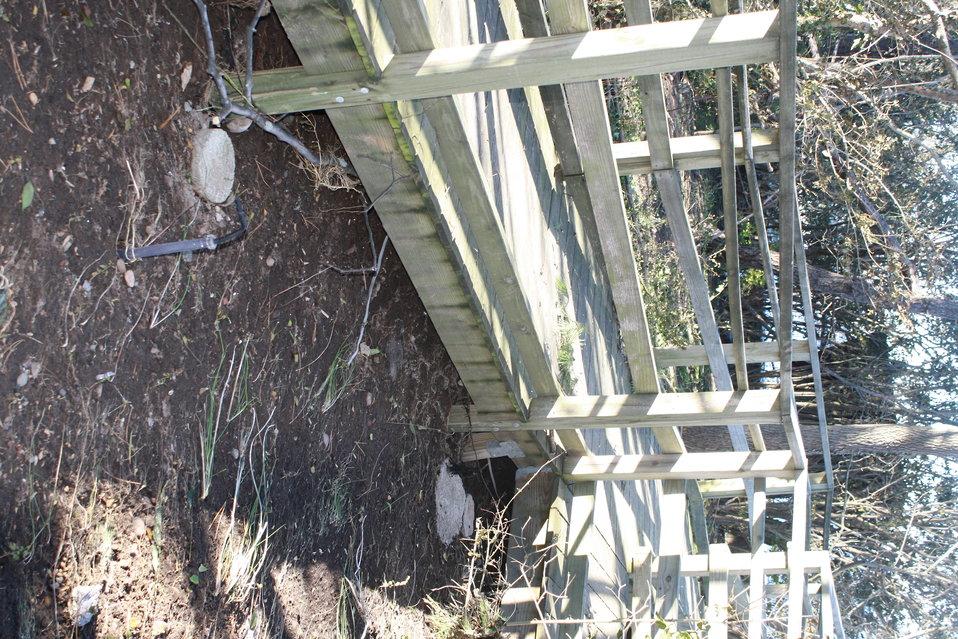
Damage at Stewart B. McKinney National Wildlife Refuge (CT)

There was damage to a handicap accessible trail on Outer Island after Hurricane Sandy. The trail was shifted from its foundation after the storm and parts of it were disconnected due to the storm.